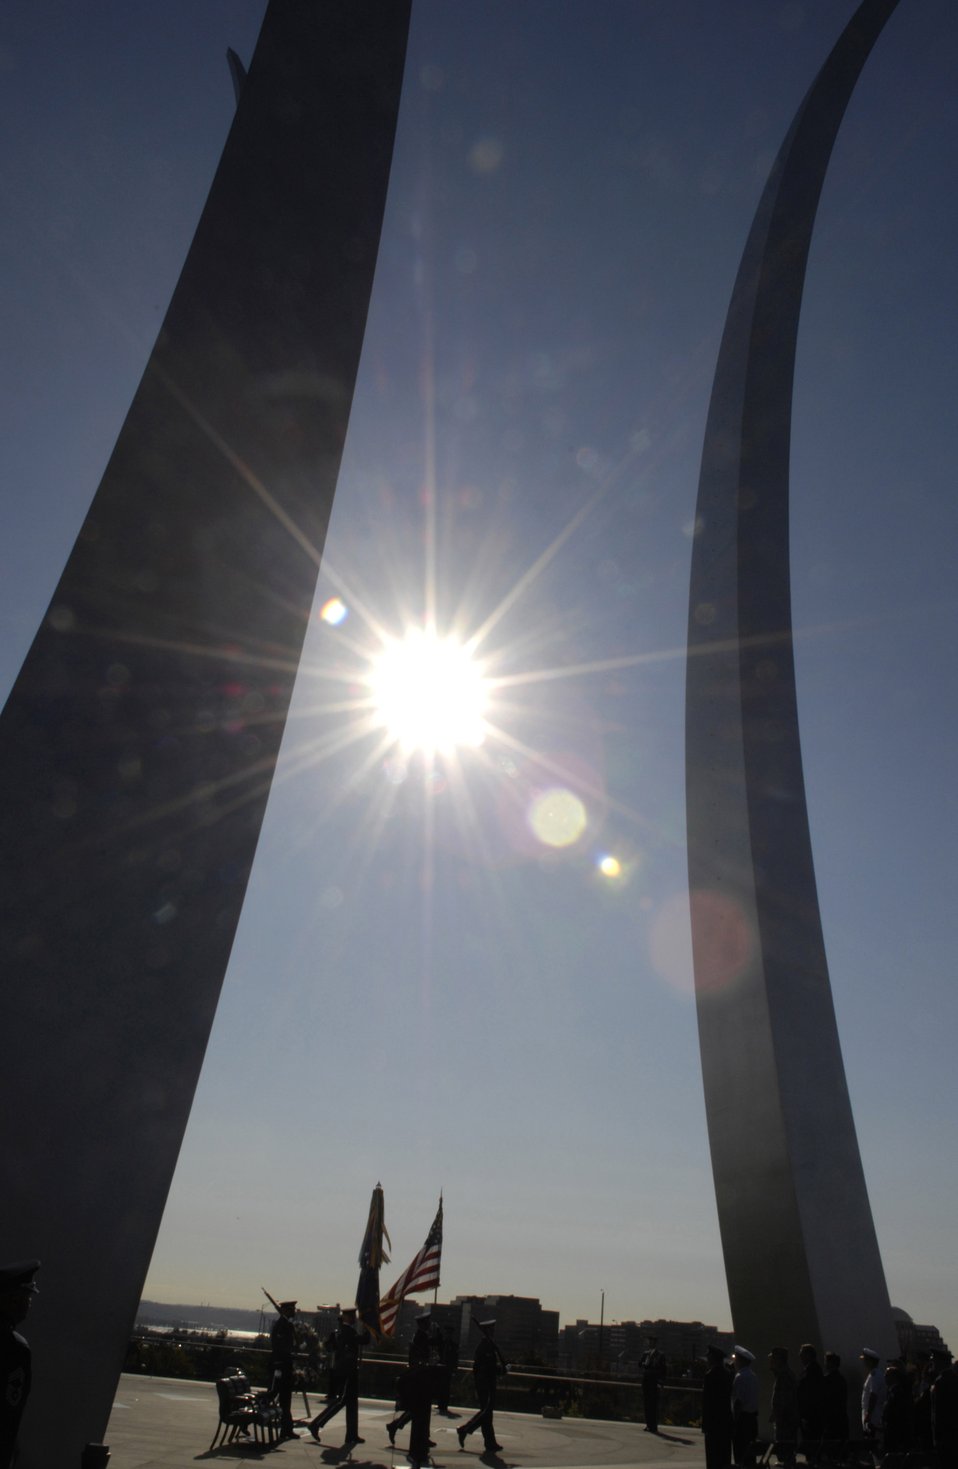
Air Force leaders gather at memorial for anniversary

The Air Force Memorial in Arlington, Va., was the site of a wreath-laying ceremony Sept,. 18 in honor of the service's 60th anniversary. Event officials included Secretary of the Air Force Michael W. Wynne, Air Force Chief of Staff Gen. T. Michael Moseley and Chief Master Sgt. of the Air Force Rodney J. McKinley.